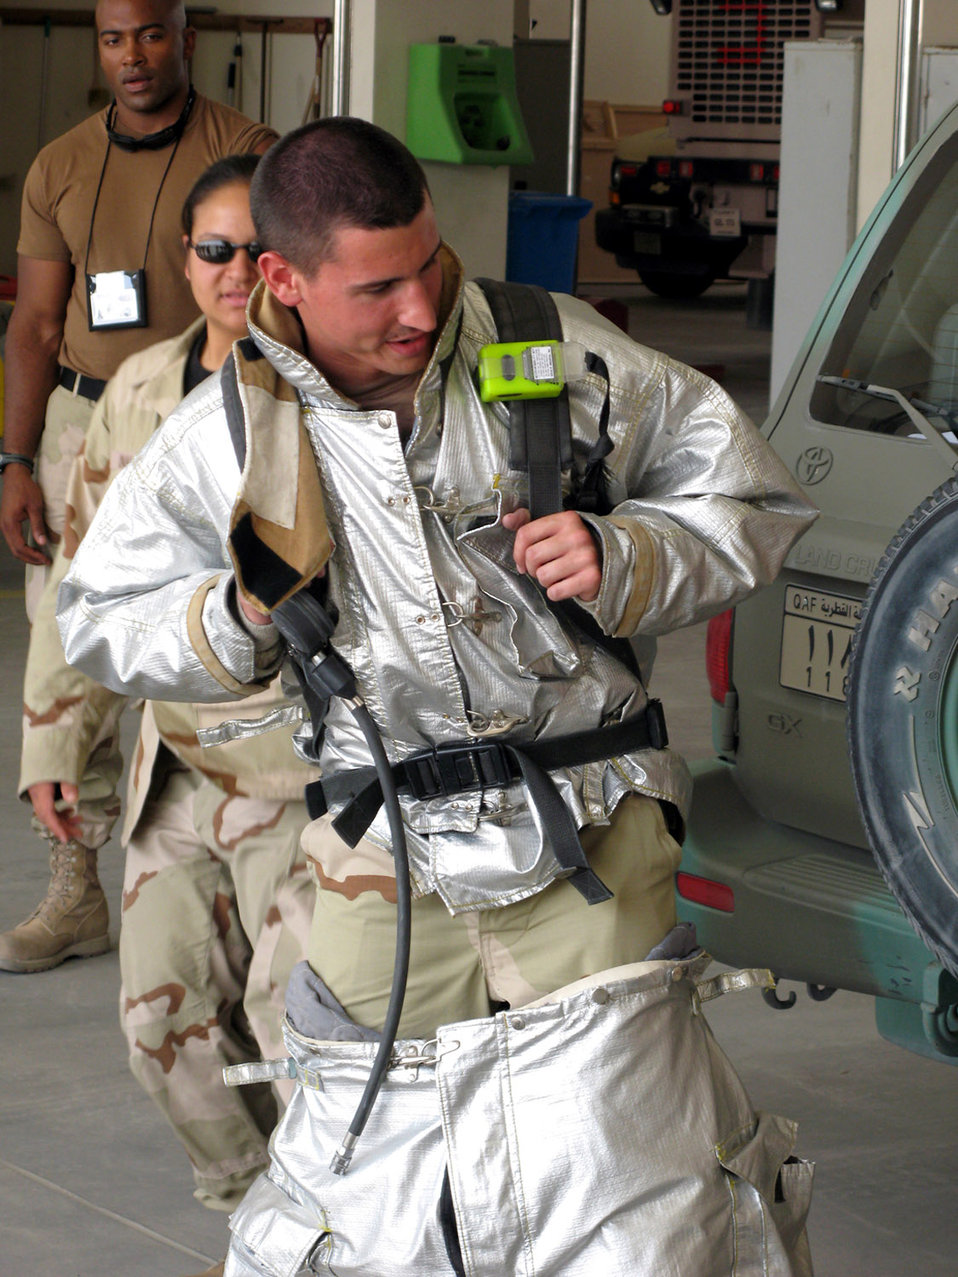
Academy cadets support 379th AEW missions

Air Force Academy cadet Ian Turner puts on a fire suit during a tour of a fire department while deployed in Southwest Asia. Sixteen cadets participating in Operation Air Force are getting their first taste of what it is like to deploy in support of operations Iraqi and Enduring Freedom and operations in the Horn of Africa.